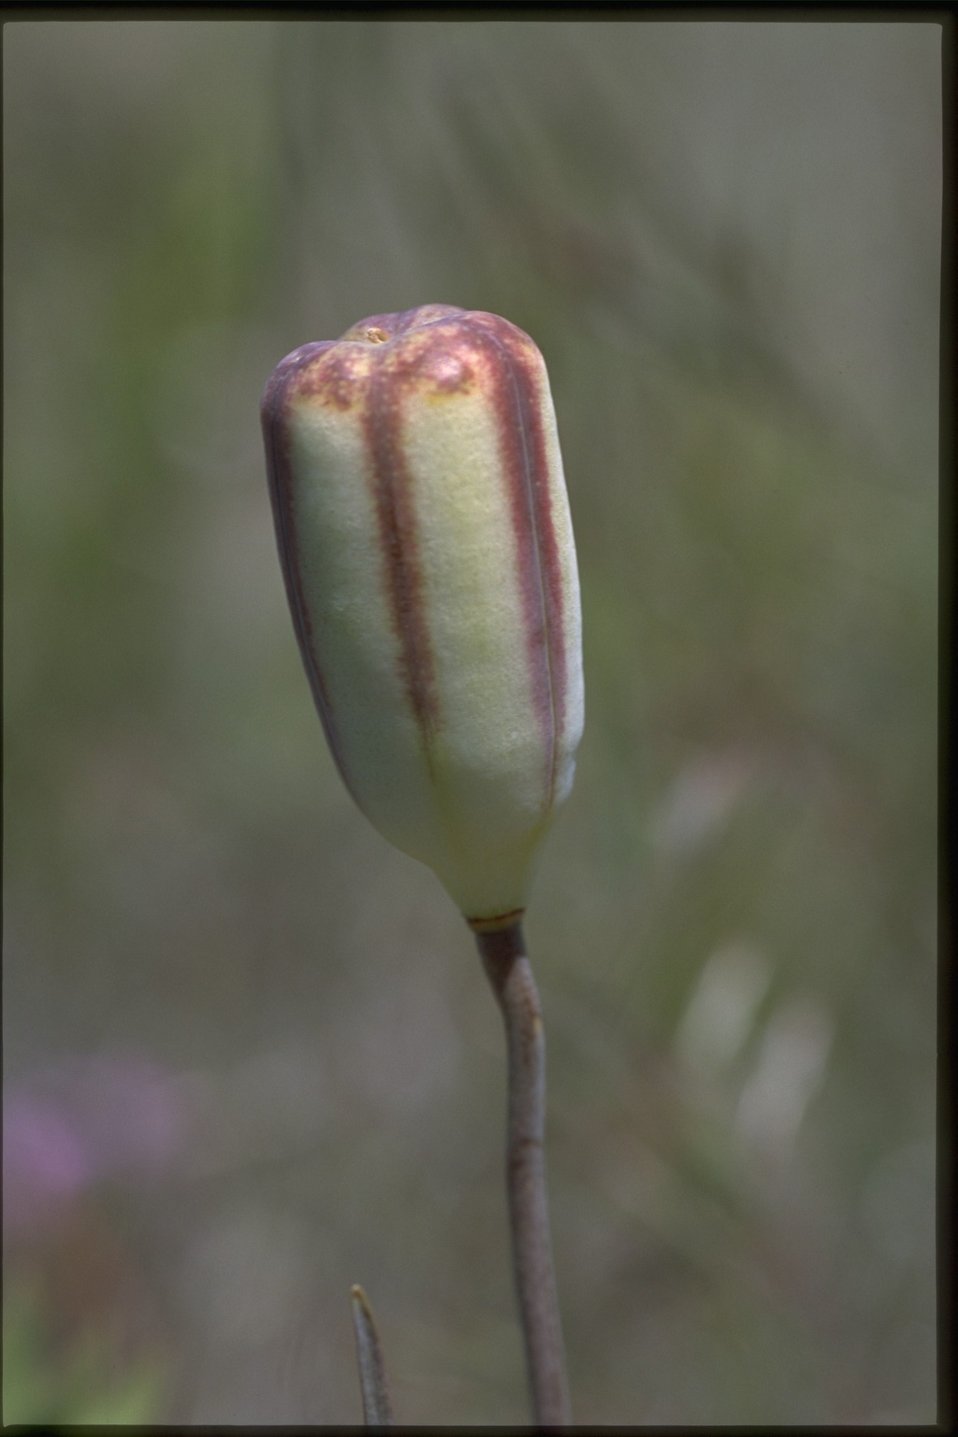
Closeup of Fritillaria pudica fruits.